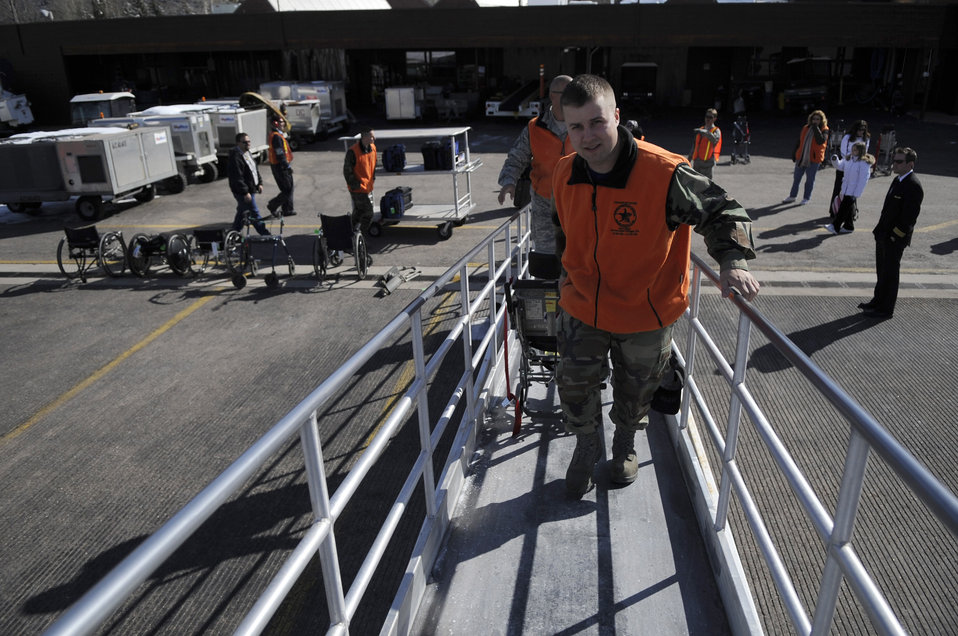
Luke Airmen assist disabled veterans at ski clinic

Airman 1st Class David Hague works his way up the ramp of a United aircraft to escort veterans off the aircraft March 28 at the Aspen Airport, Colo. Airman Hague is an aerospace propulsion journeyman assigned to the 56th Component Maintanance Squadron at Luke Air Force Base, Ariz. Veterans from all over the world fly into Aspen to attend the Disabled American Veterans Winter Sports Clinic.